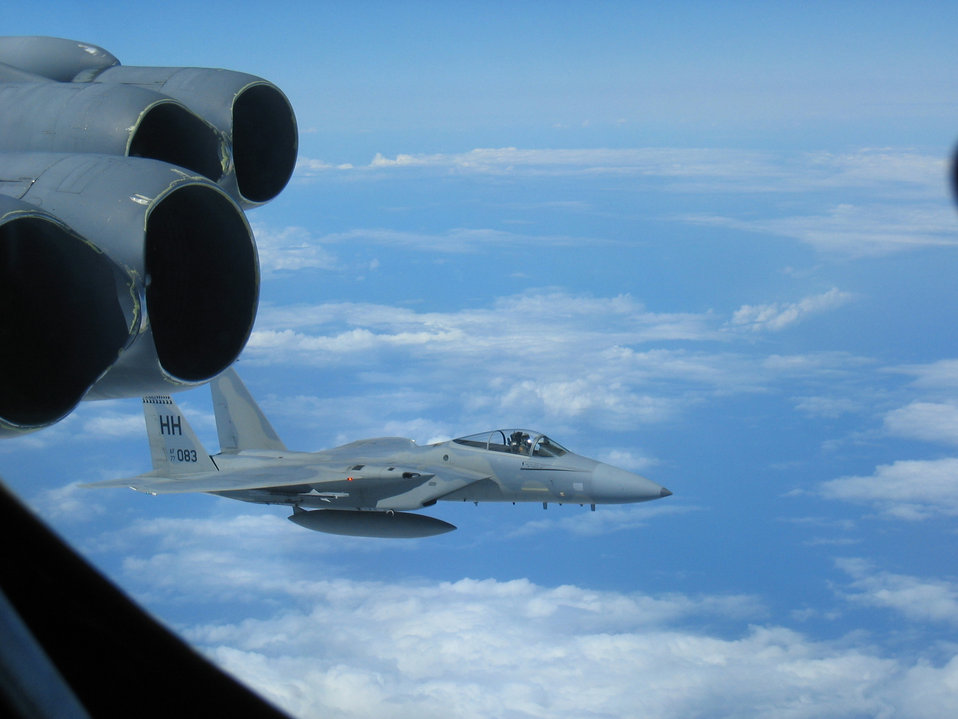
Andersen bombers participate in Koa Lightning exercise

A Hickam-based F-15 flies alongside a B-52 Stratofortress deployed from Andersen Air Force Base, Guam March 2 during the recent Koa Lightning exercise held in the Pacific Theatre. Airmen from the 96th Expeditionary Bomb Squadron flew 18-hour missions in their B-52s allowing the aircrews to hone their skills in close air support and dissimilar aircraft combat training.